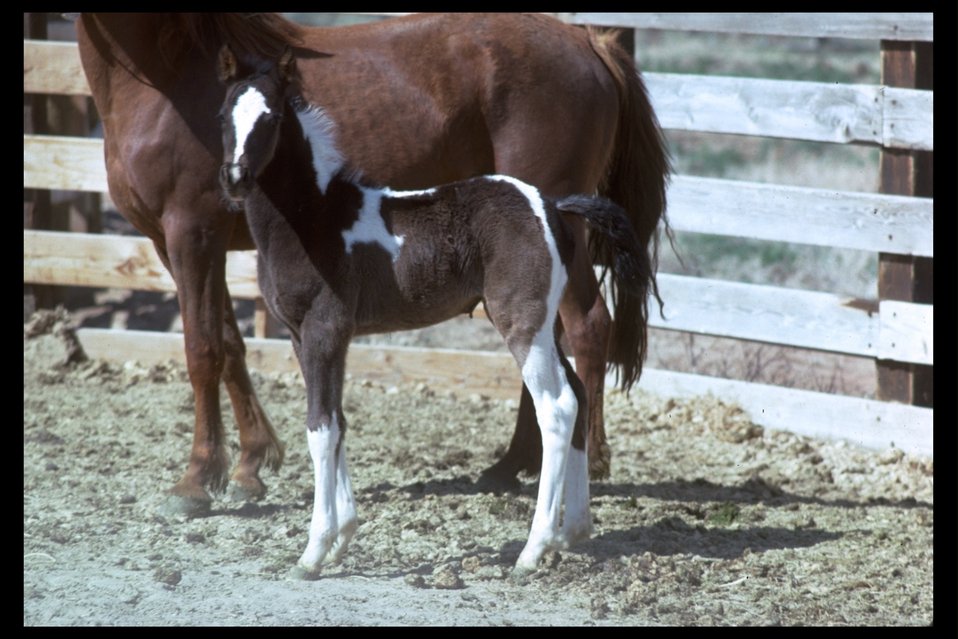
A pair of colorful Pinto Wild Horses at Burns Wild Horse Corrals in South Steens Horse Management Area.